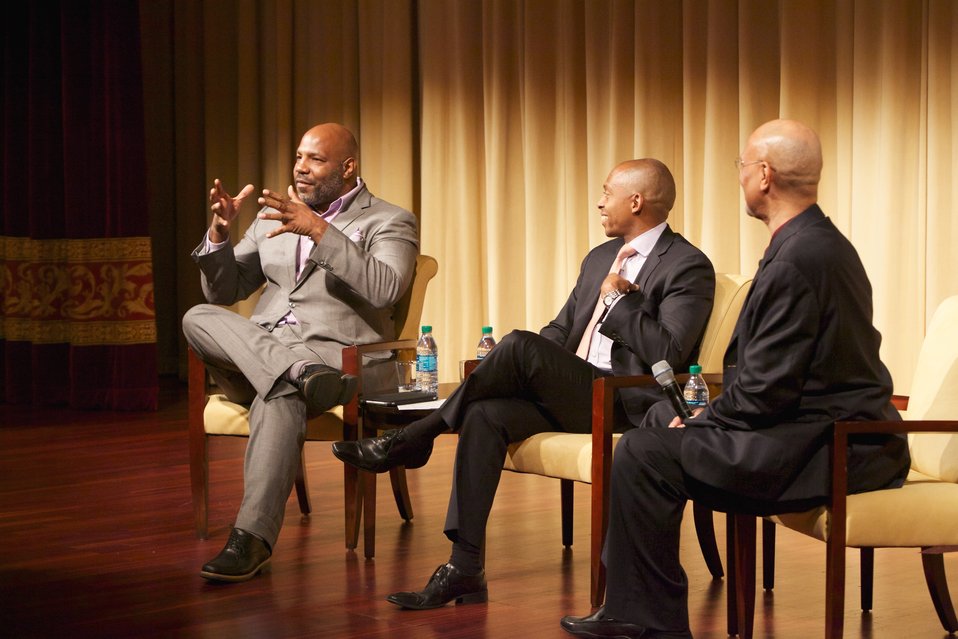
Solomon Northup's Odyssey